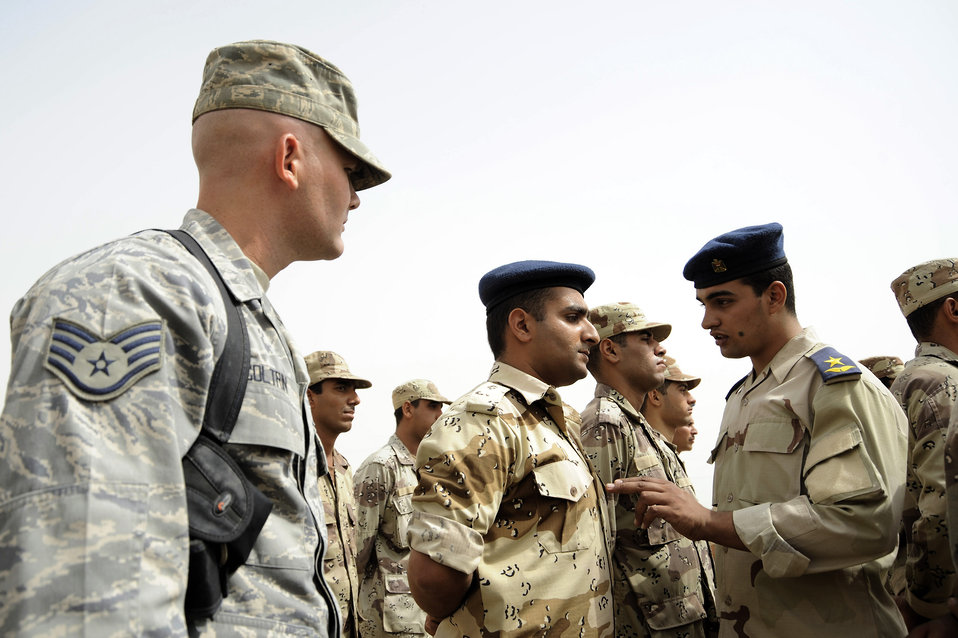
Passion for teaching drives military training instructor

Staff Sgt. Matthew Coltrin (left) watches Iraqi air force Lt. Ali (right) explain the importance of military bearing to a warrant officer during parade practice Sept. 28 at Al Taji Air Base, Iraq. Sergeant Coltrin is a military training instructor air adviser with the 370th Expeditionary Training Squadron. Lieutenant Ali is an Iraqi military training instructor.